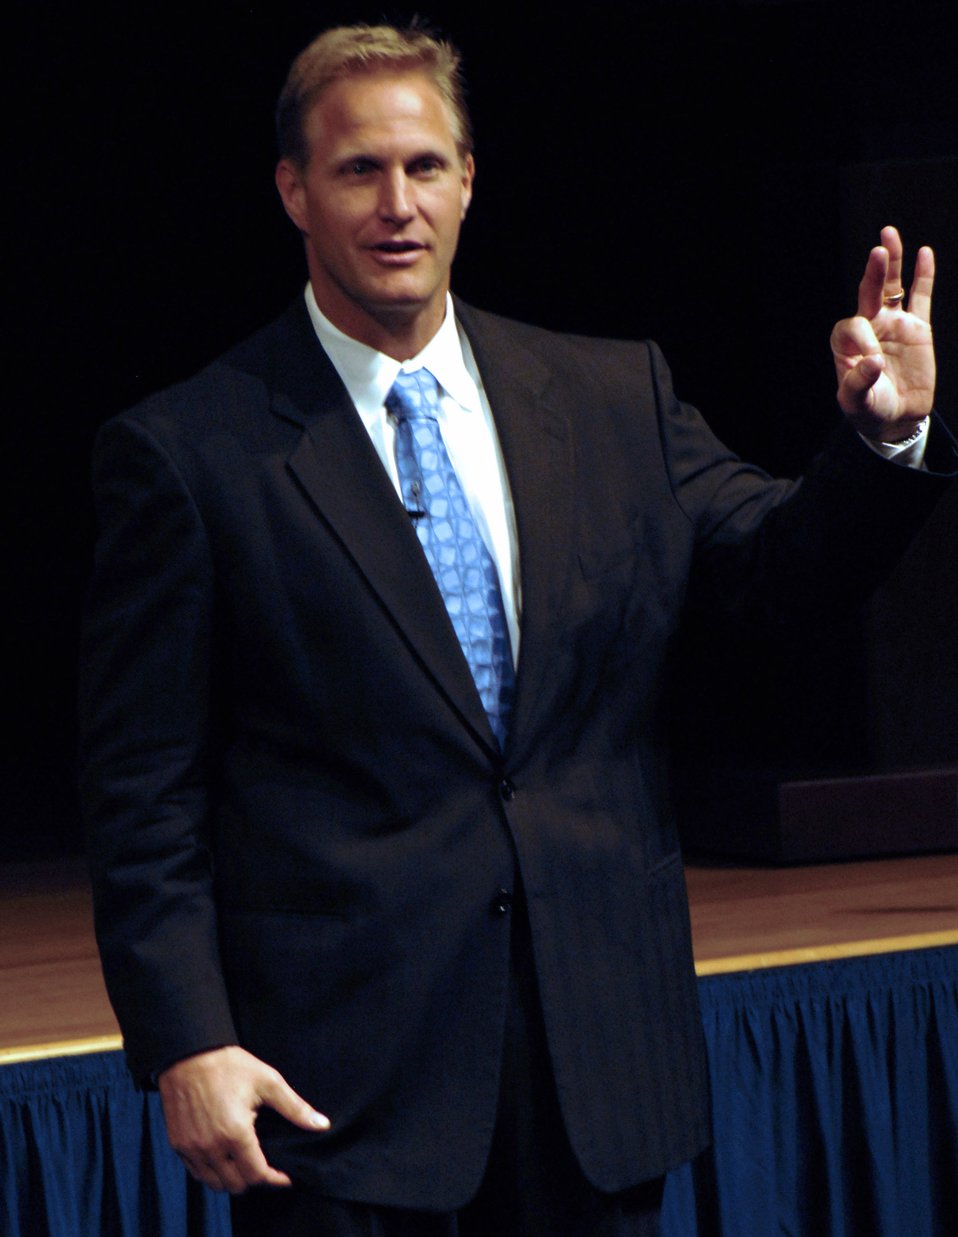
Former A-10 pilot, Cowboy speaks at Pentagon

Chad Hennings, a former A-10 pilot and Dallas Cowboy speaks to Airmen at the Pentagon March 27. Mr. Hennings is a motivational speaker and discussed the challenges of balancing career and family as well as his life experiences in the Air Force and the NFL.